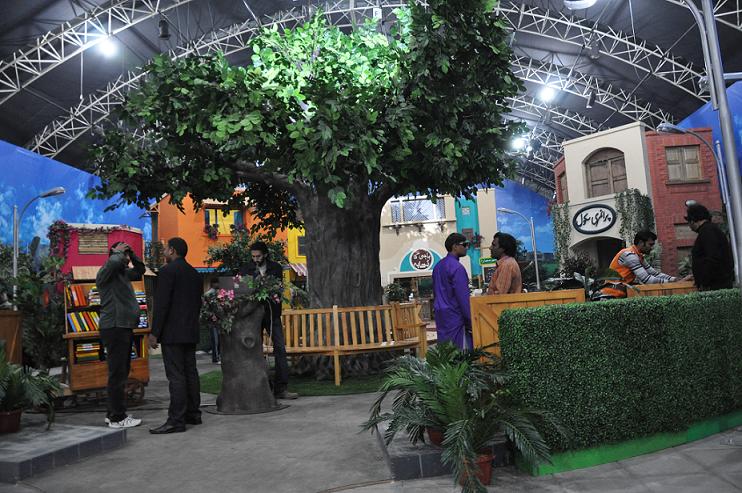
Sim Sim Hamara set.